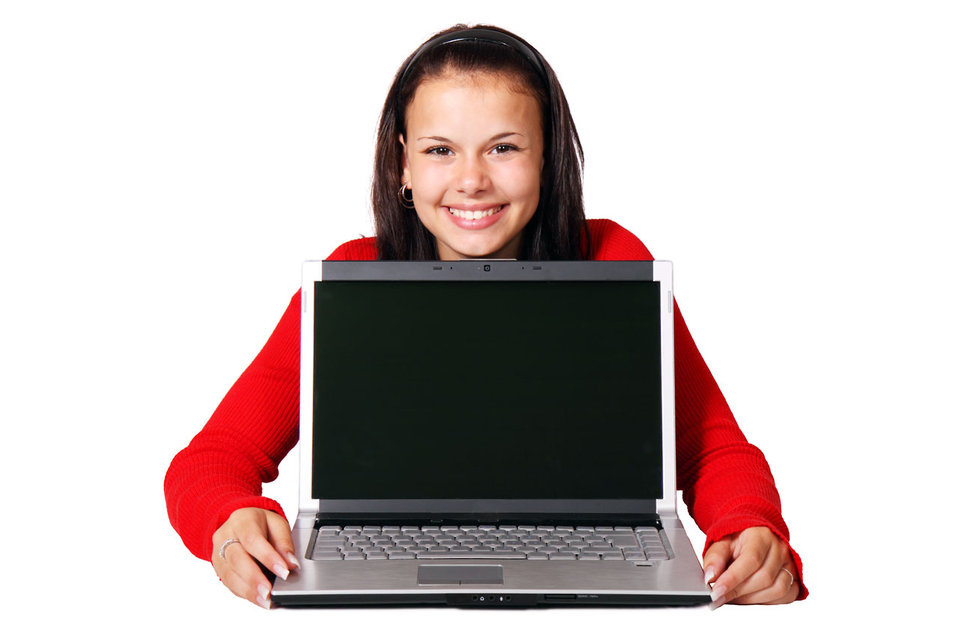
Woman smiling with laptop

Young woman smiling and showing laptop isolated on white background.